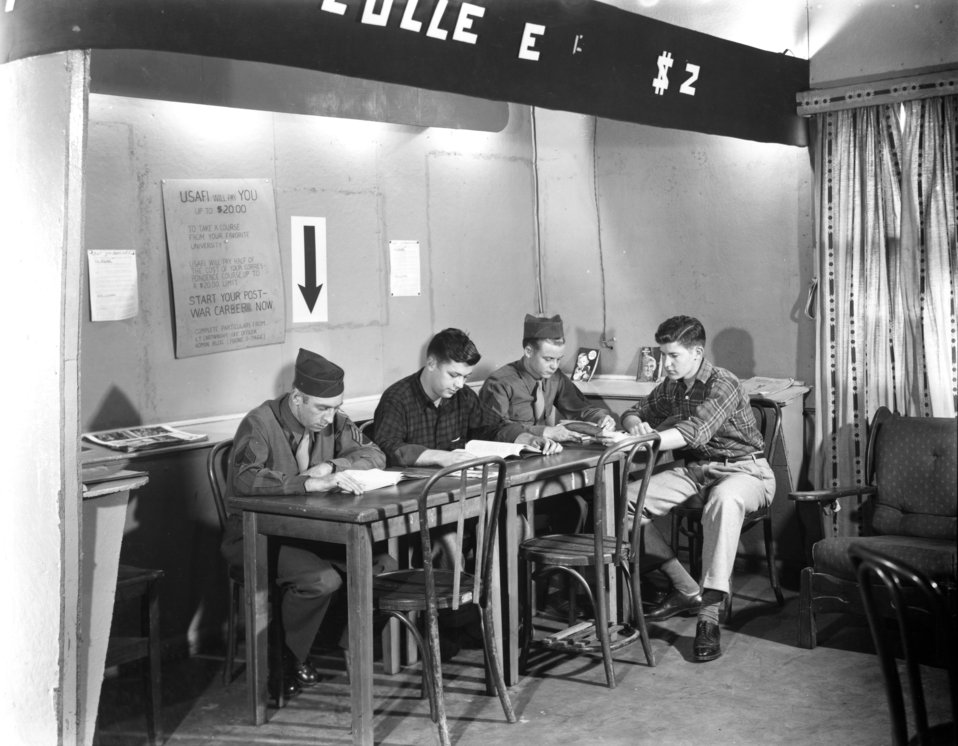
Army Activity at Oak Ridge